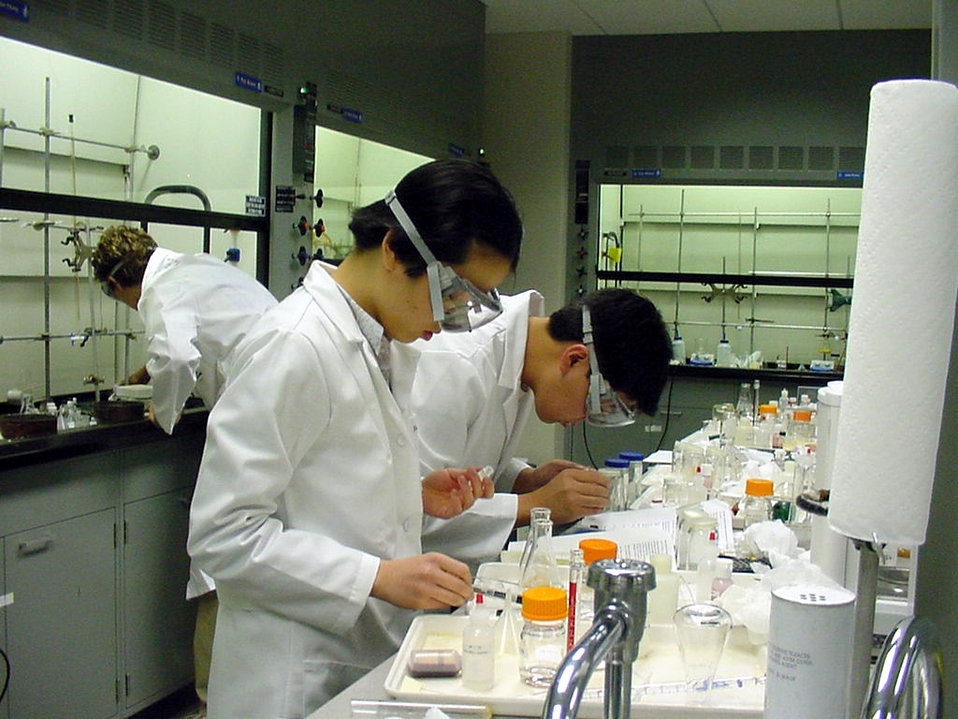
Lab work

U.S. AIR FORCE ACADEMY, Colo. -- High-school students Xiao Jing Huang (left) and Allen Cheng work on chemistry projects during the U.S. National Chemistry Olympiad Study Camp here.